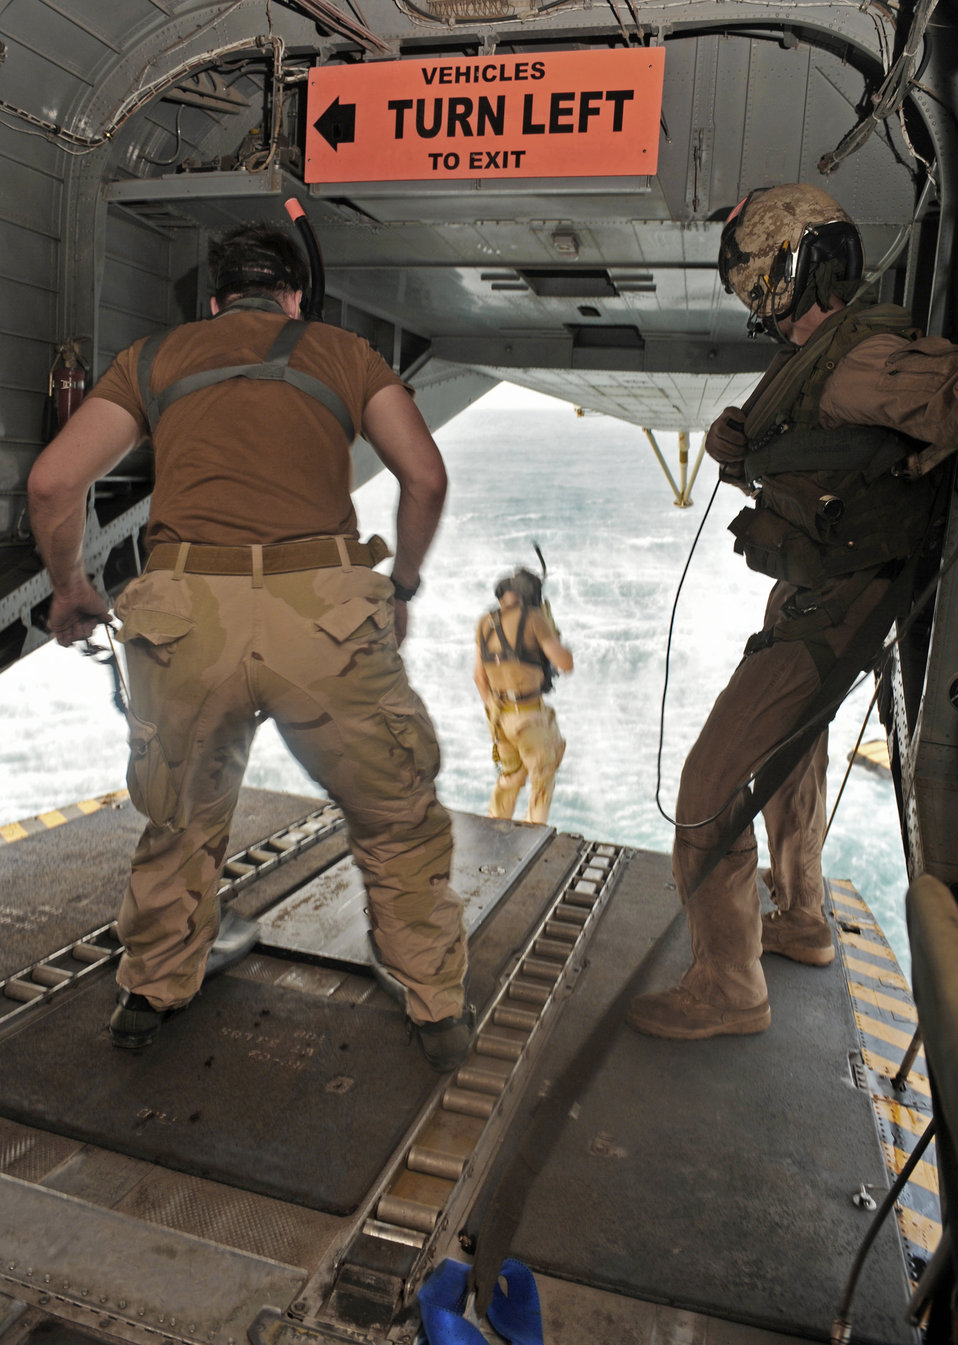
Deep breath!

Senior Airman Michael Hagerman, a pararescueman attached to the 82nd Expeditionary Rescue Squadron, jumps out of a Marine Corps CH-53E Super Stallion helicopter during an exercise July 18 near Camp Lemonier, Djibouti. The 82nd ERQS is deployed to Combined Joint Task Force - Horn of Africa.